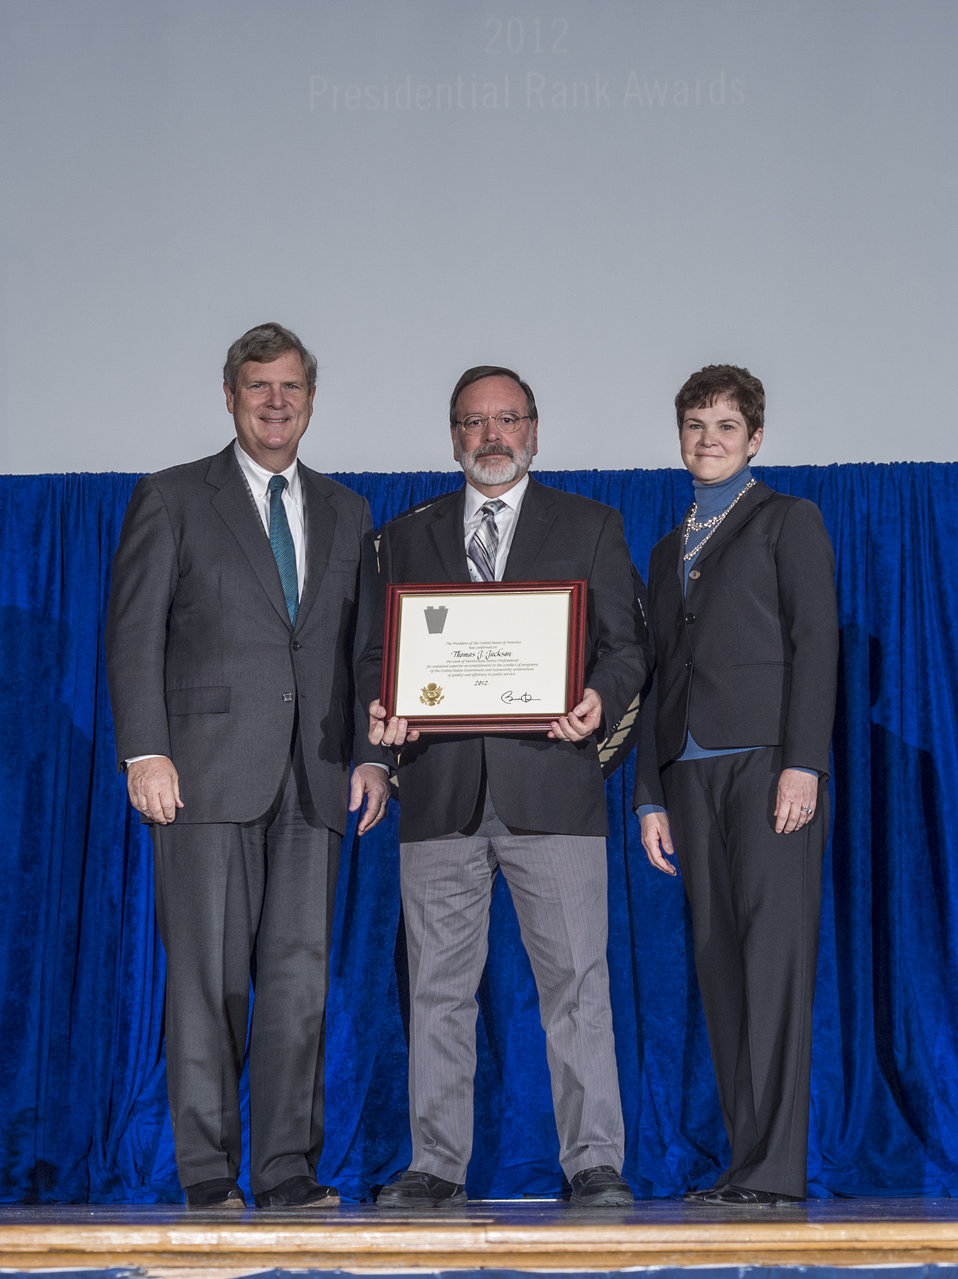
Agriculture Secretary Tom Vilsack and Agriculture Deputy Secretary Krysta Harden the Presidential Rank Award to Thomas J. Jackson (accepting Dr. Steven Schafer) for Meritorious Senior Professional for sustained superior accomplishment in the conduct of programs of the U.S. Government and noteworthy achievement of quality and efficiency in the public service at the 2013 Secretary's Honor Awards in the Jefferson Auditorium at the U.S. Department of Agriculture (USDA) in Washington, D.C. on Wednesday, Dec. 11, 2013.